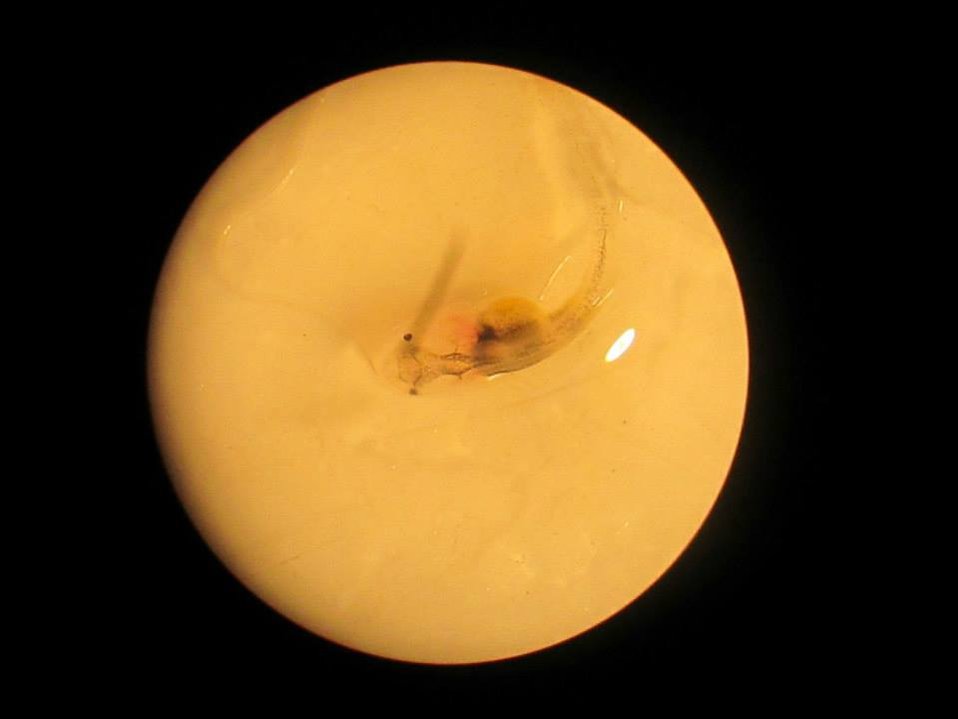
Paddlefish Fry

Paddlefish at 2 weeks old